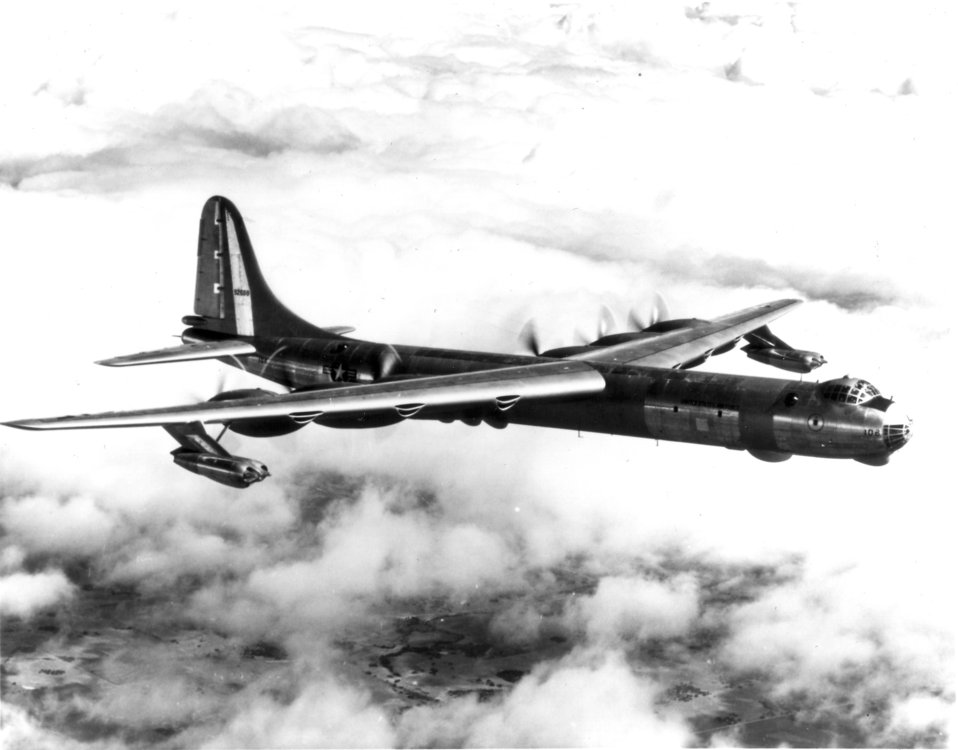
RB-36D

1940's -- The Convair RB-36D is the jet-augmented version of the intercontinental strategic bomber. The aircraft has four General Electric J-47 jet engines, mounted in pairs under outer wing edges, that supplement six Pratt & Whitney piston engines.